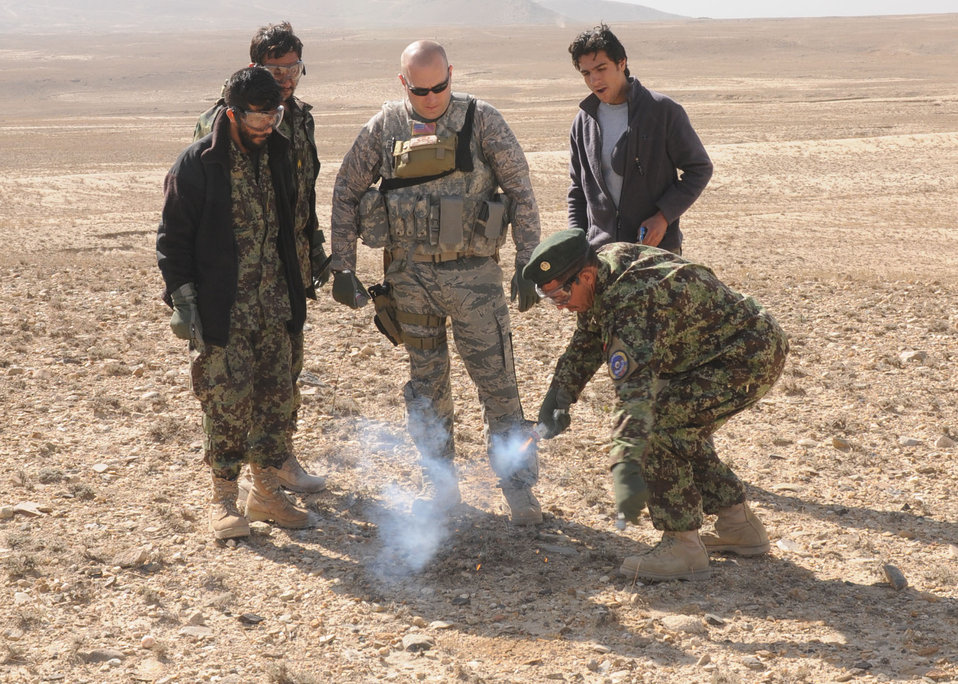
Signal training

Afghan life support airmen practice using signaling devices. They will begin teaching this skill to Afghan air force pilots so they know how to signal for rescue.